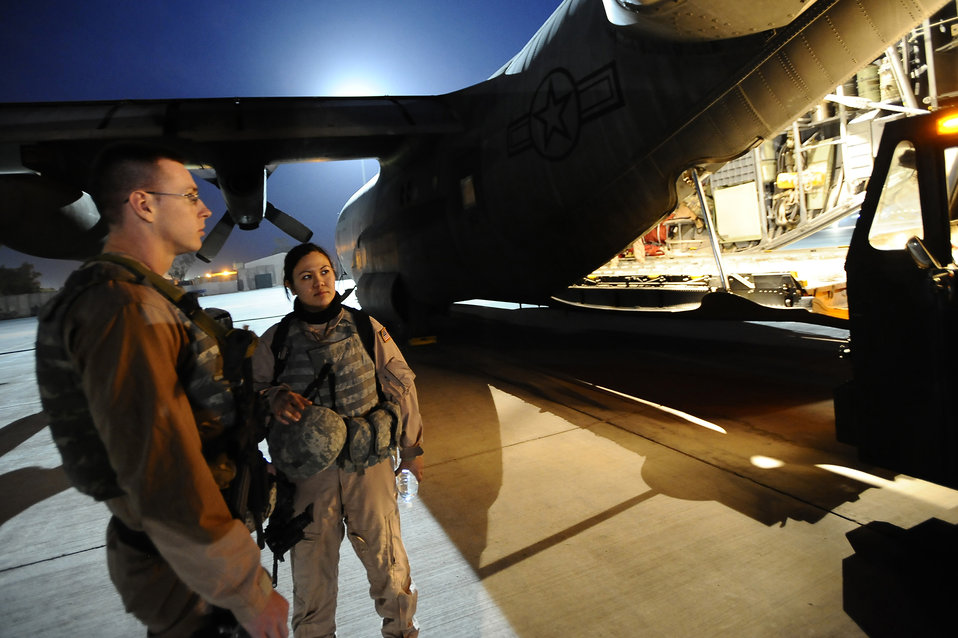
I'll fly away

Senior Airmen Matthew Rinehart and Rosie Munoz stand outside of a C-130 Hercules Dec. 31, 2008, at Joint Base Balad, Iraq. The Airmen serve as the aircraft's Fly Away Security Team, which provides ground security for the aircraft as it loads and unloads cargo at unsecured airfields. Airmen Rinehart and Munoz are deployed to the 332nd Expeditionary Security Forces Team from Andrews Air Force Base, Md. Airman Rinehart's hometown is York, Pa. Airman Munoz's hometown is El Paso, Texas.